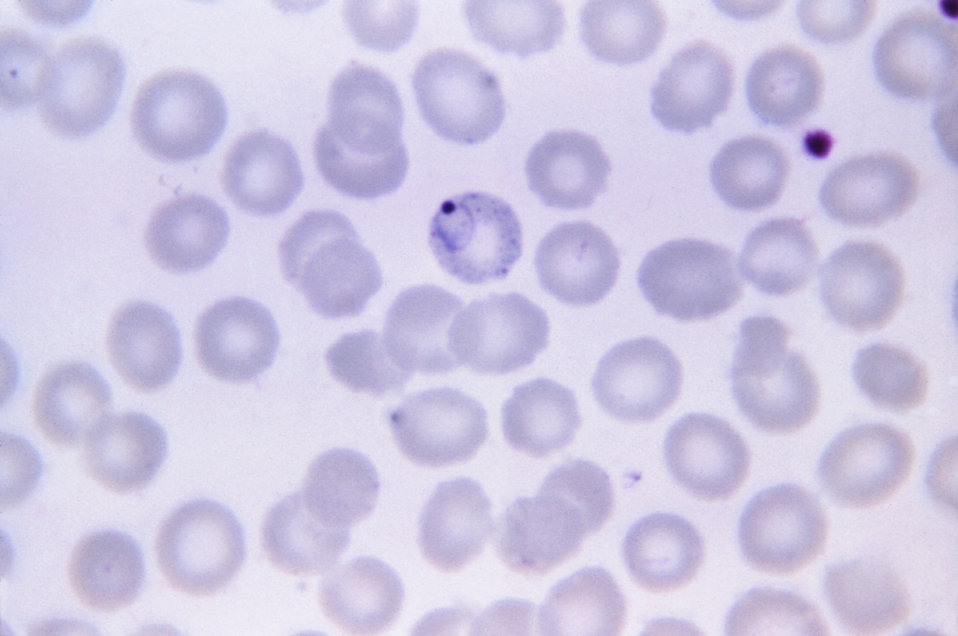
This thin film Giemsa stained micrograph depicts a 'ring-form' Plasmodium ovale trophozoite.